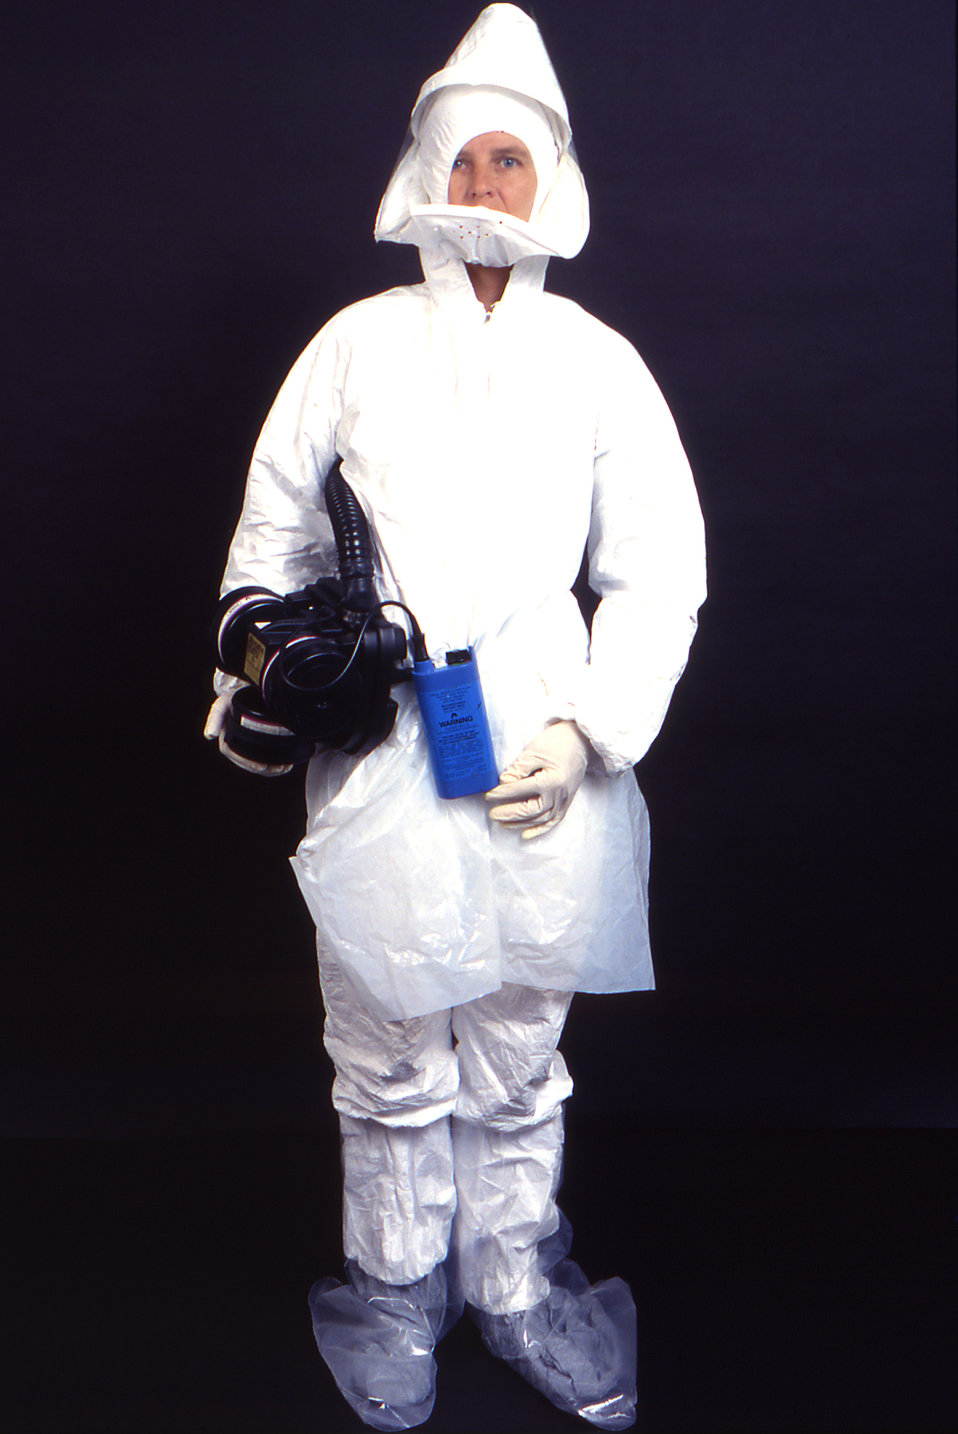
This 1995 image depicts an anterior view of a laboratory technician wearing garments usually worn by field techs including a disposable white coverall, a disposable plastic apron, head covering, latex gloves, and foot coverings, and is equipped with what is known as a 3M� Breathe Easy� Powered Air Purifying Respirator, PAPR.